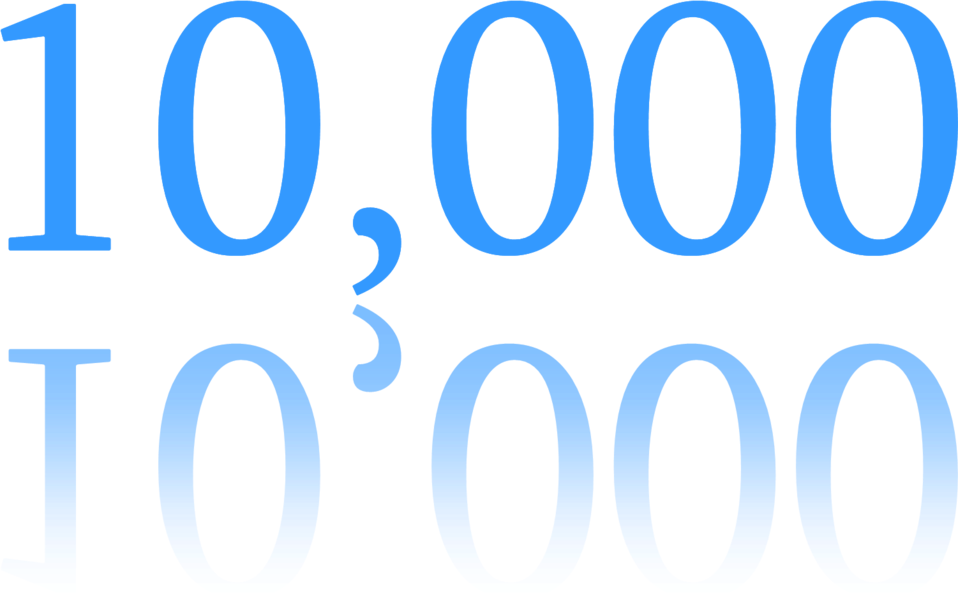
An image for me to put on my talk page (and for anybody else who wants to put 10,000 on their pages). It was originally meant for the fact that I've surpassed my 10,000th edit!